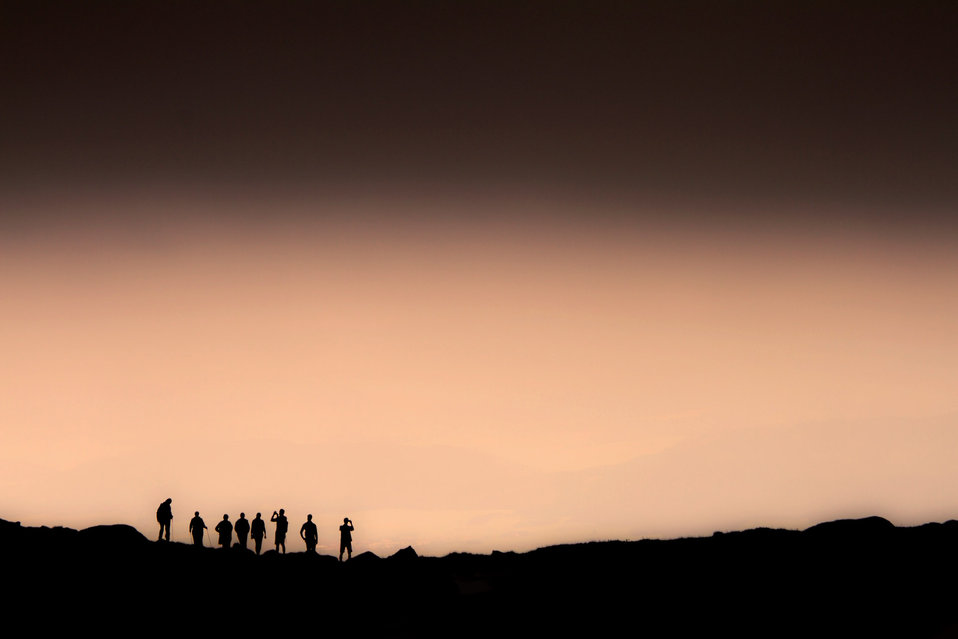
Great view.